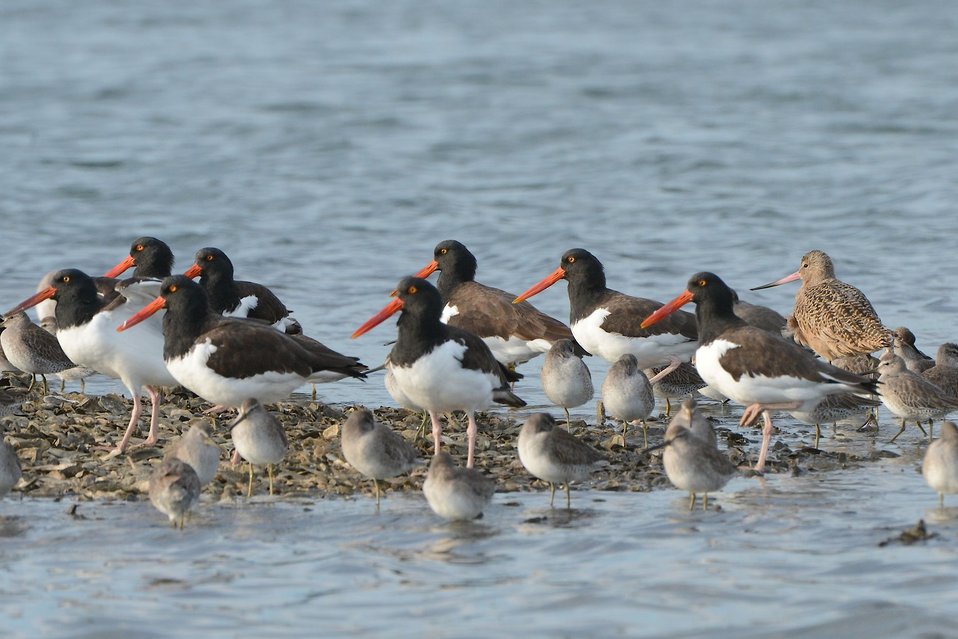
Cape Romain Refuge

Oystercatchers, marbled godwits and dowitchers in the Cape Romain National Wildlife Refuge wilderness, SC.